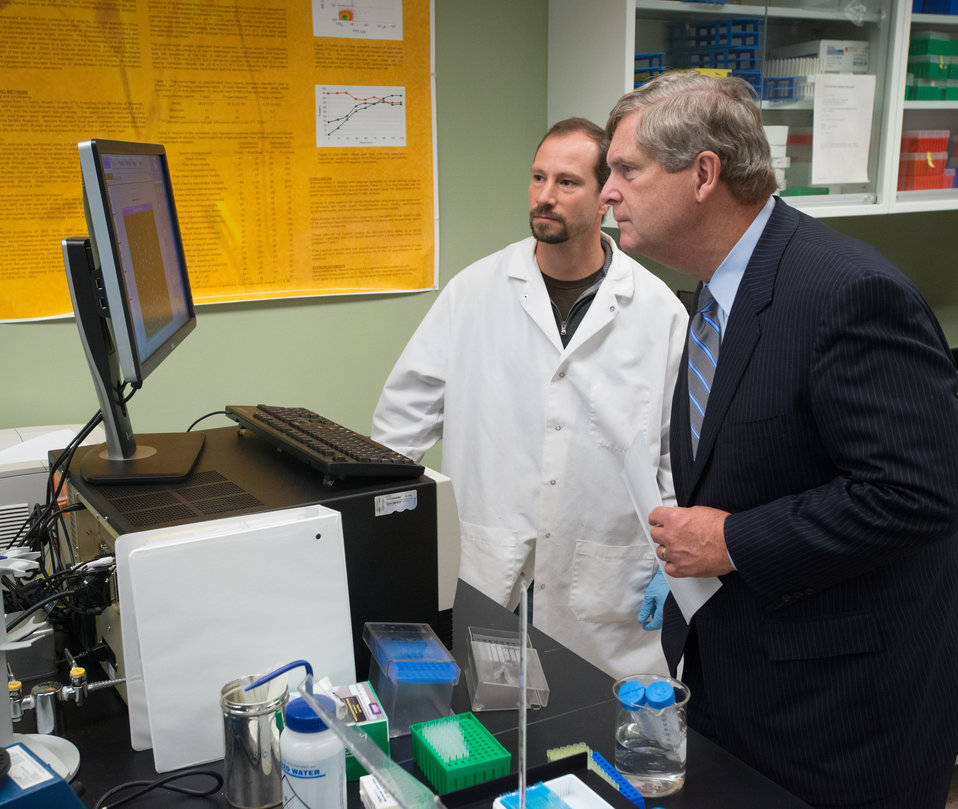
Agriculture Secretary Tom Vilsack, right, is assisted by Agriculture Research Service (ARS), National Center for Genetic Resources Preservation (NCGRP), Biological Lab Technician Scott Spiller as they look at a live view of 50 wiggling boar sperm scanned by an electronic microscope that is used to evaluate their mortality, in Ft. Collins, CO, on Wednesday, Nov. 6, 2013.